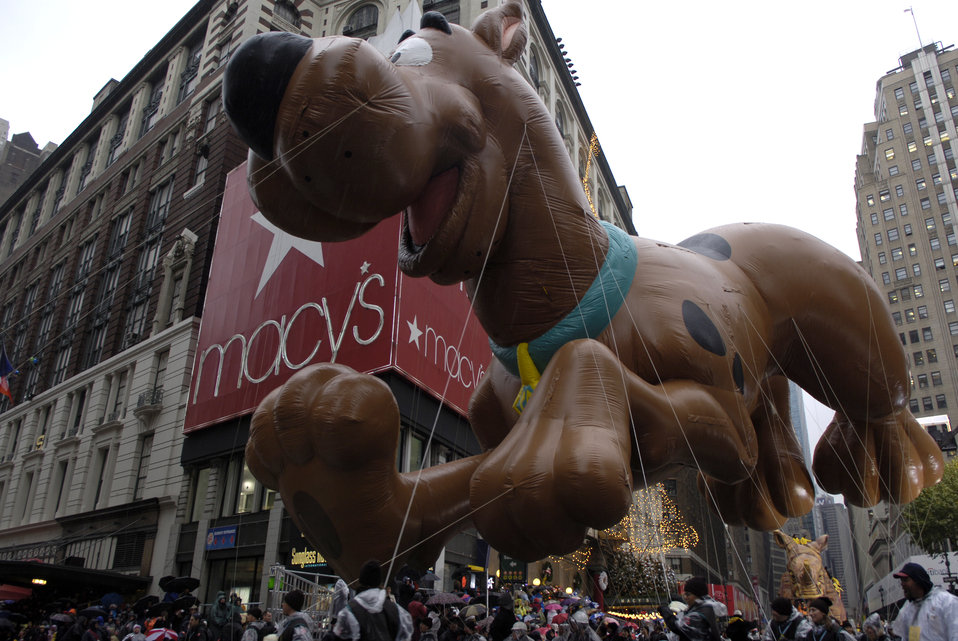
Macy's Thanksgiving Day Parade

The Scooby-Doo balloon rounds the corner of Broadway and 34th Street at the 80th Macy's Thanksgiving Day Parade in New York City, N.Y., Nov. 23. The U.S. Air Force Academy Marching Band participated in the parade.